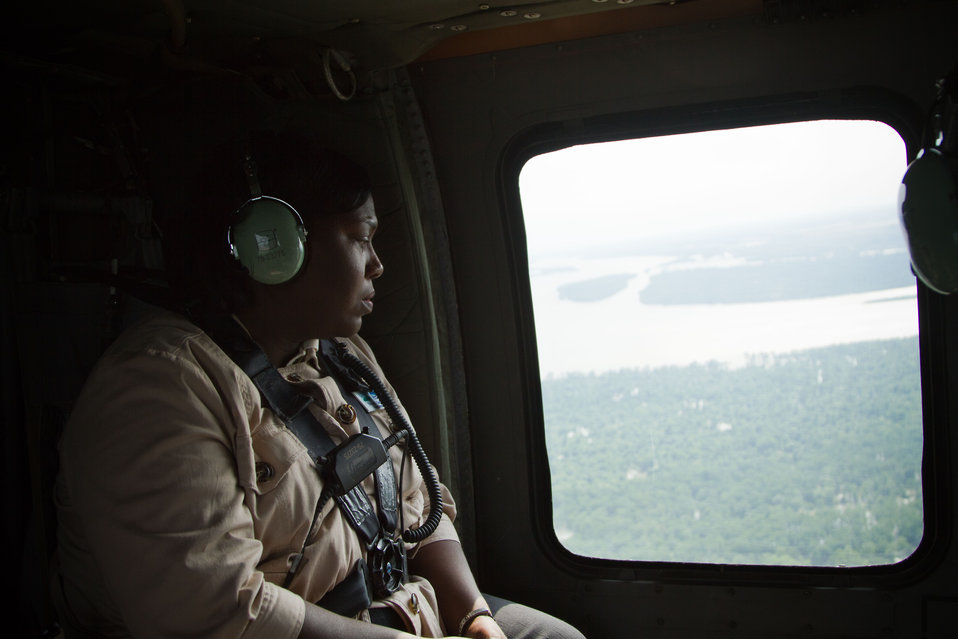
U.S. Department of Agriculture’s Rural Development State Director for Mississippi Trina N. George observes the Mississippi floods and its impact on the farms, wilderness, and populated areas, on Thursday, May 19, 2011. Aerial platform was a UH-60 Blackhawk commanded by Col. Kennedy and his flight crew from the Army Aviation Support Facility #1 at Hawkins Field in Jackson, MS.